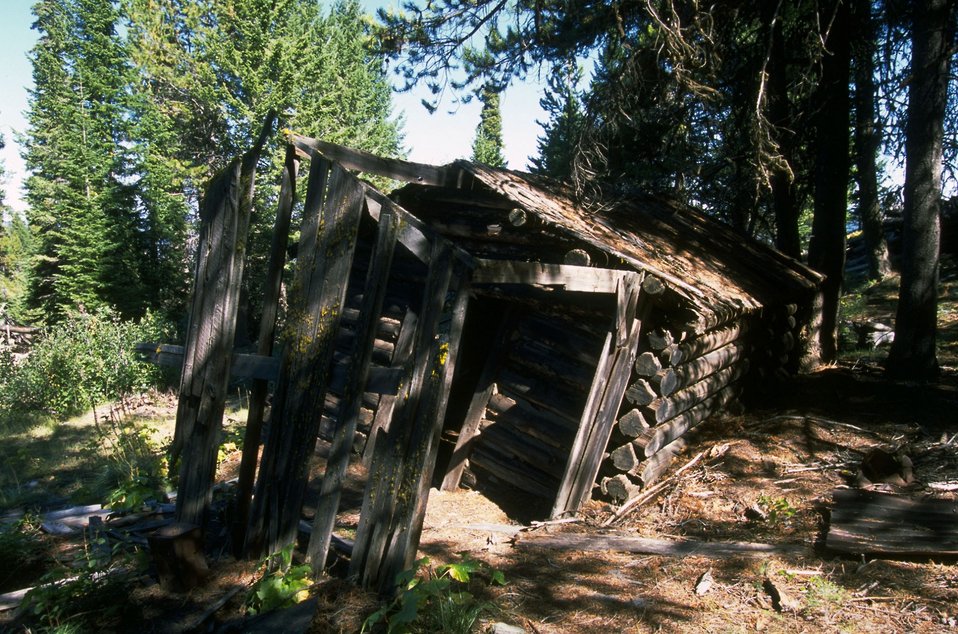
Old cabin in Coloma